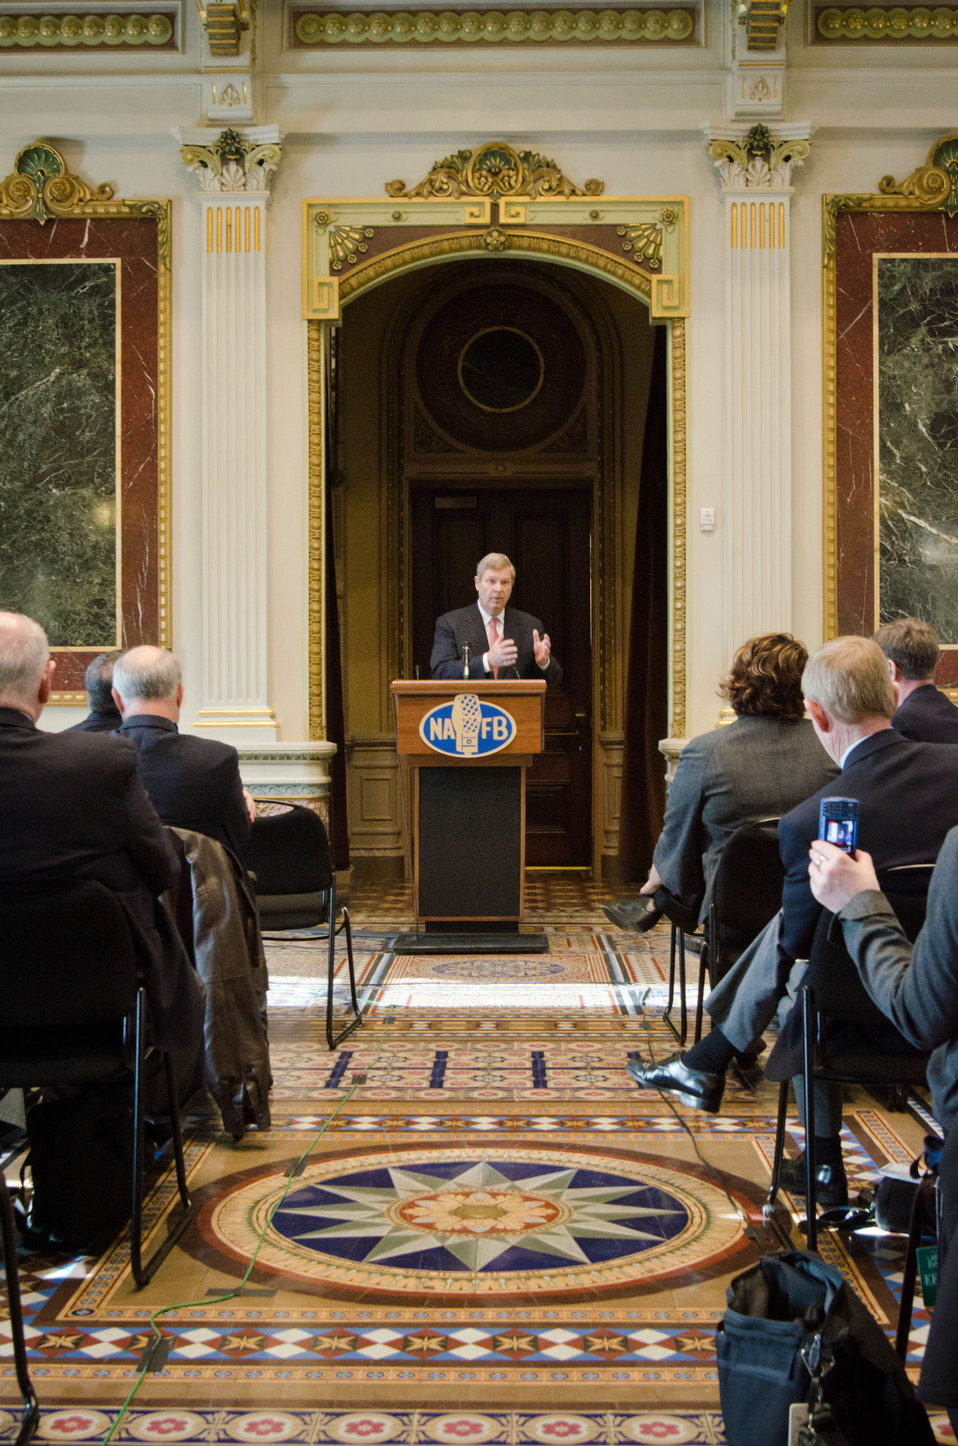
Agriculture Secretary Tom Vilsack discussed the strength of the rural economy at the spring National Association of Farm Broadcasters (NAFB), “Washington Watch” member retreat in Washington, D.C. This year the meeting was held in the Eisenhower Executive Office Building, Indian Treaty Room Tuesday, April 24, 2012 featuring United Sates Department of Agriculture and Obama Administration officials. This opportunity provides an occasion to highlight efforts to rebuild and revitalize rural America, including efforts for the agricultural community. NAFB is the recognized and trusted source of agricultural and rural lifestyle information for America with approximately 200 members who broadcast via radio in nearly every state in the country.